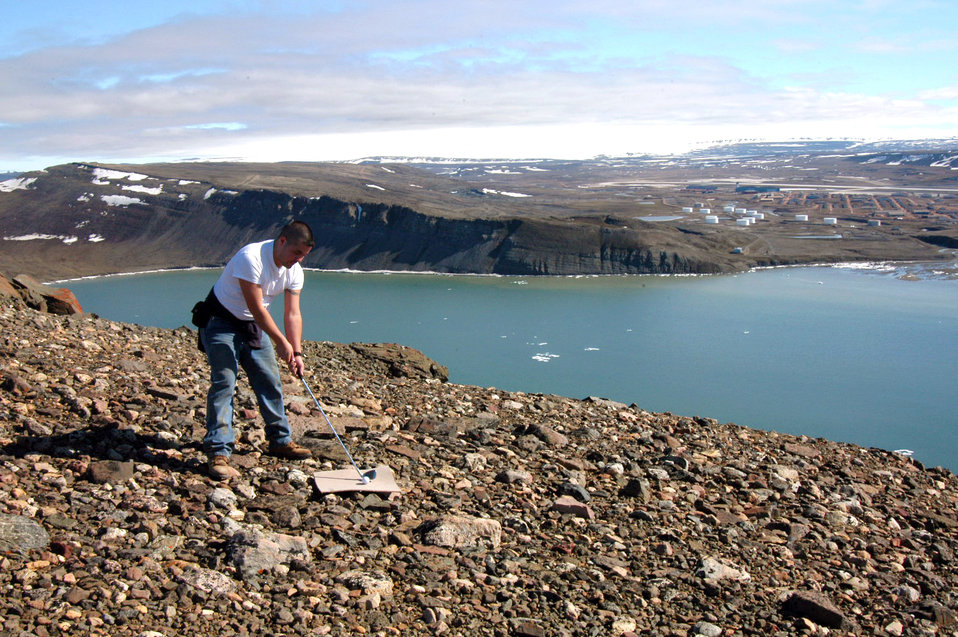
Tee time

THULE AIR BASE, Greenland -- Senior Airman Diego Solis tees off at the 20th Annual Mount Dundas Open, the northernmost golf tournament in the world, here July 3. More than 35 participants climbed 800 feet of shale rock to reach the nine-hole par-3 course, which overlooks the air base, the polar ice cap and iceberg-filled North Star Bay. The final 75 feet up Mount Dundas featured a rope climb up shear rock face, making it necessary to move golf clubs and other equipment by helicopter. Airman Solis is assigned to the 821st Security Forces Squadron.